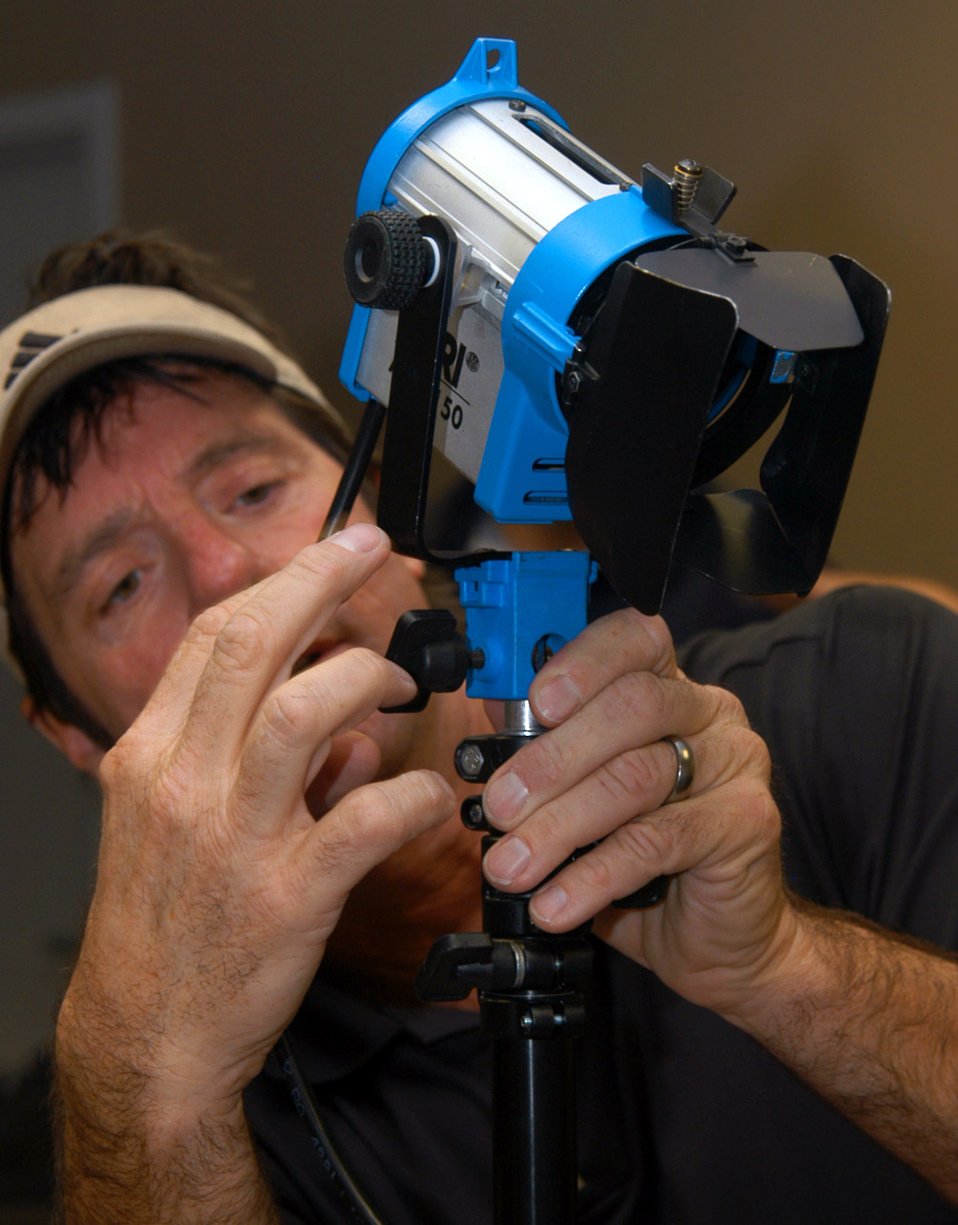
'Modern Marvels' film crew visits Schriever

Scott Killian sets up dramatic lighting for an interview with Lt. Col. Kurt Kuntzelman during a media visit Oct. 30. Mr. Killian was part of an Actuality Productions film crew that visited the base to tape a segment on GPS for the History Channel TV series